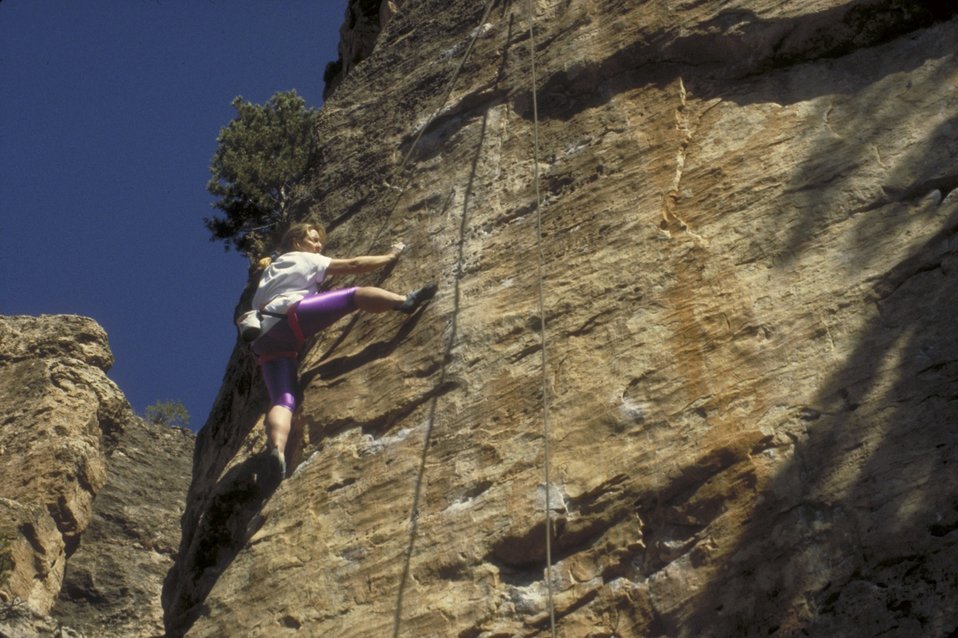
Rock climbing in the Gold Belt National Back Country Byway.